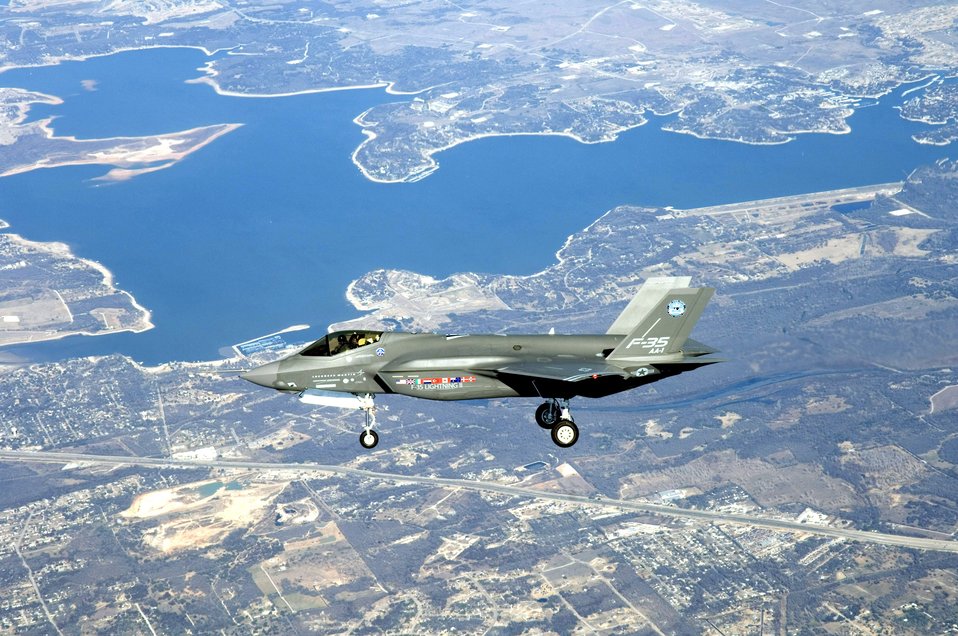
Lightning in sky for first time

The F-35 Lightning II Joint Strike Fighter makes its initial flight Dec. 15 over Fort Worth, Texas.